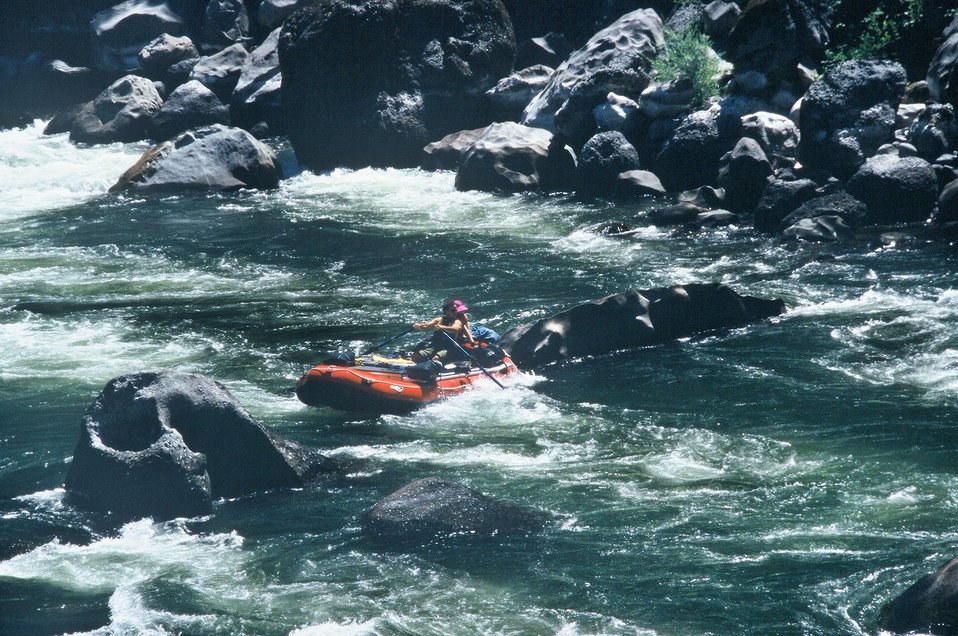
Blossom Rapids